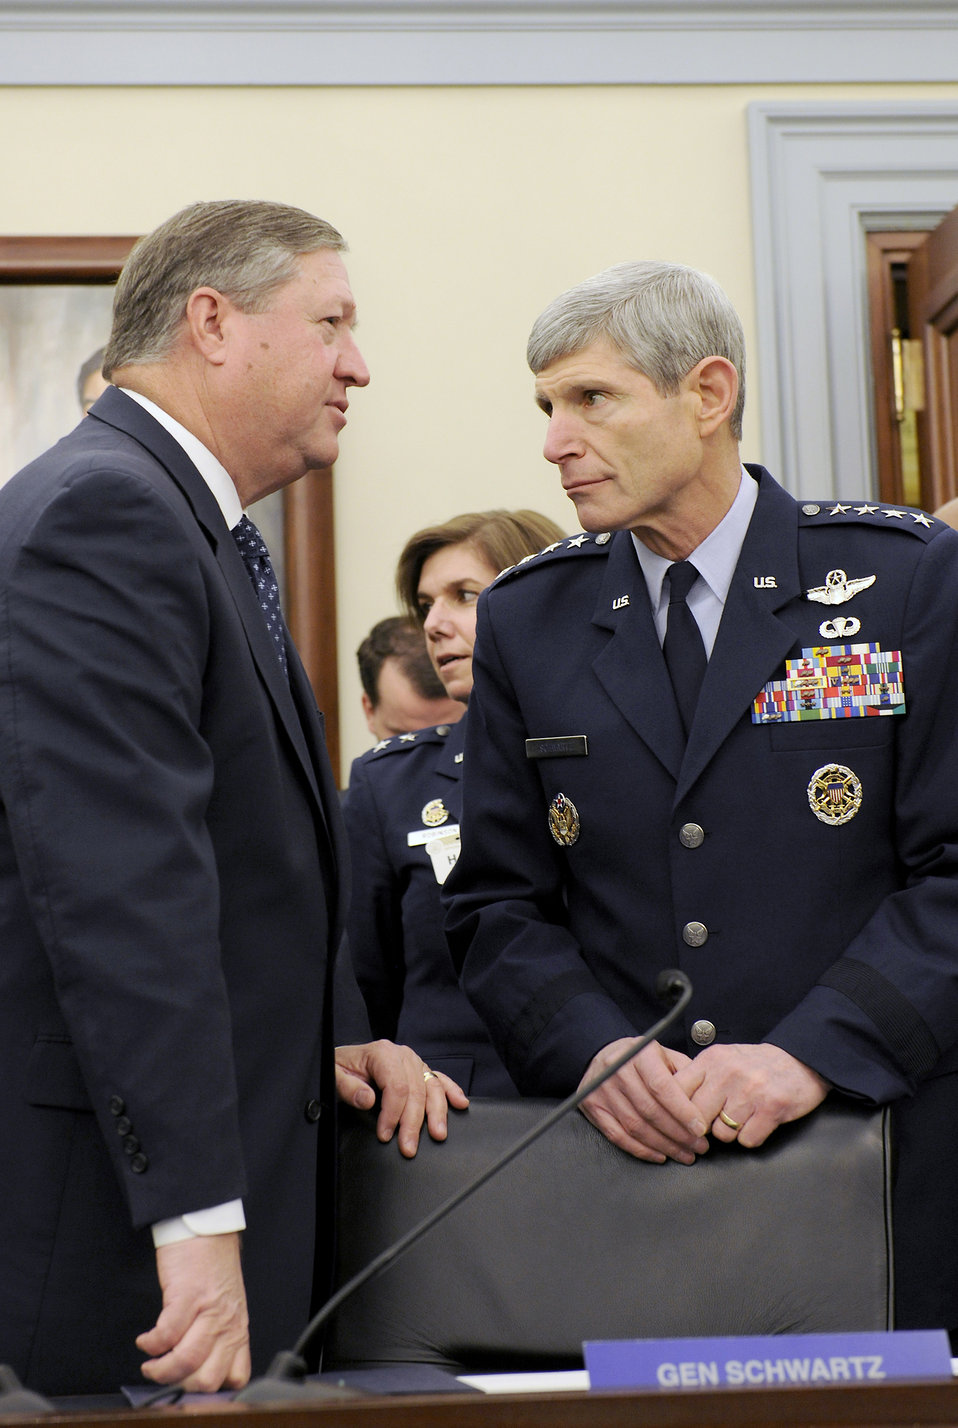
SecAF and CSAF during budget hearing

Secretary of the Air Force Michael Donley and Air Force Chief of Staff Gen.
Norton Schwartz talk prior to an Air Force budget hearing before the U.S.
House Appropriations Subcommittee on Defense on March 6, 2012, in Washington, D.C.